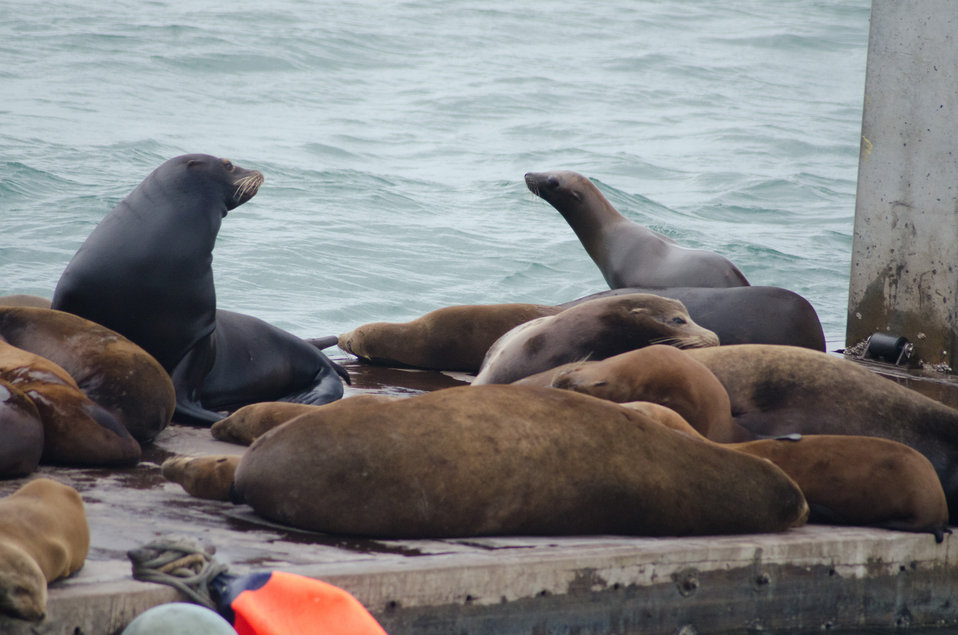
Sea lions and harbor seals rest on a visitor’s pier at Moss Landing, CA., on Thursday, June 16, 2011. Clarity of the water below them is related to the amount of silt and sediment, above natural levels, that flows into the Monterey Bay National Marine Sanctuary in the coastal waters of California.